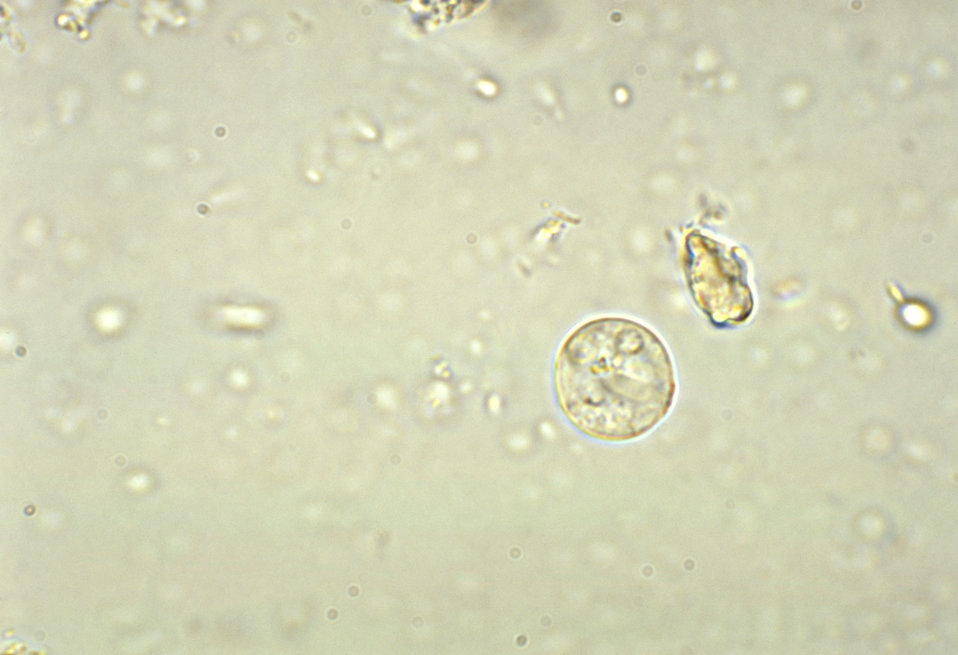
This unstained photomicrograph depicts a cyst of an Entamoeba histolytica amoebic parasite, displaying a visible chromatoid body.